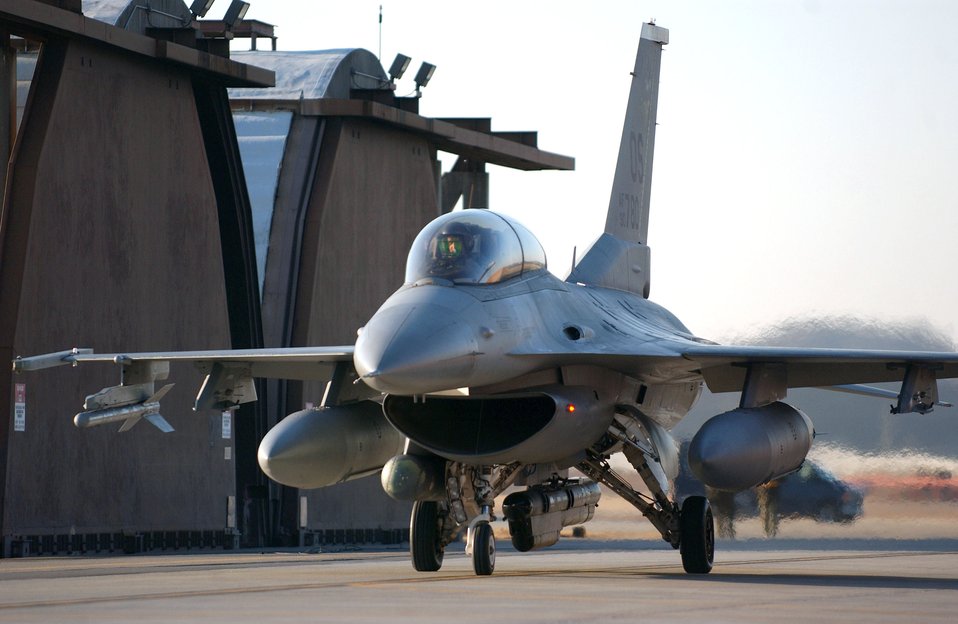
Beverly Bulldog 06-01

OSAN AIR BASE, South Korea (AFPN) -- An F-16 Fighting Falcon returns after flying a training mission supporting exercise Beverly Bulldog 06-01 here Jan. 24. Exercise scenarios test the base's ability to protect its operations from missile attacks or enemy forces.